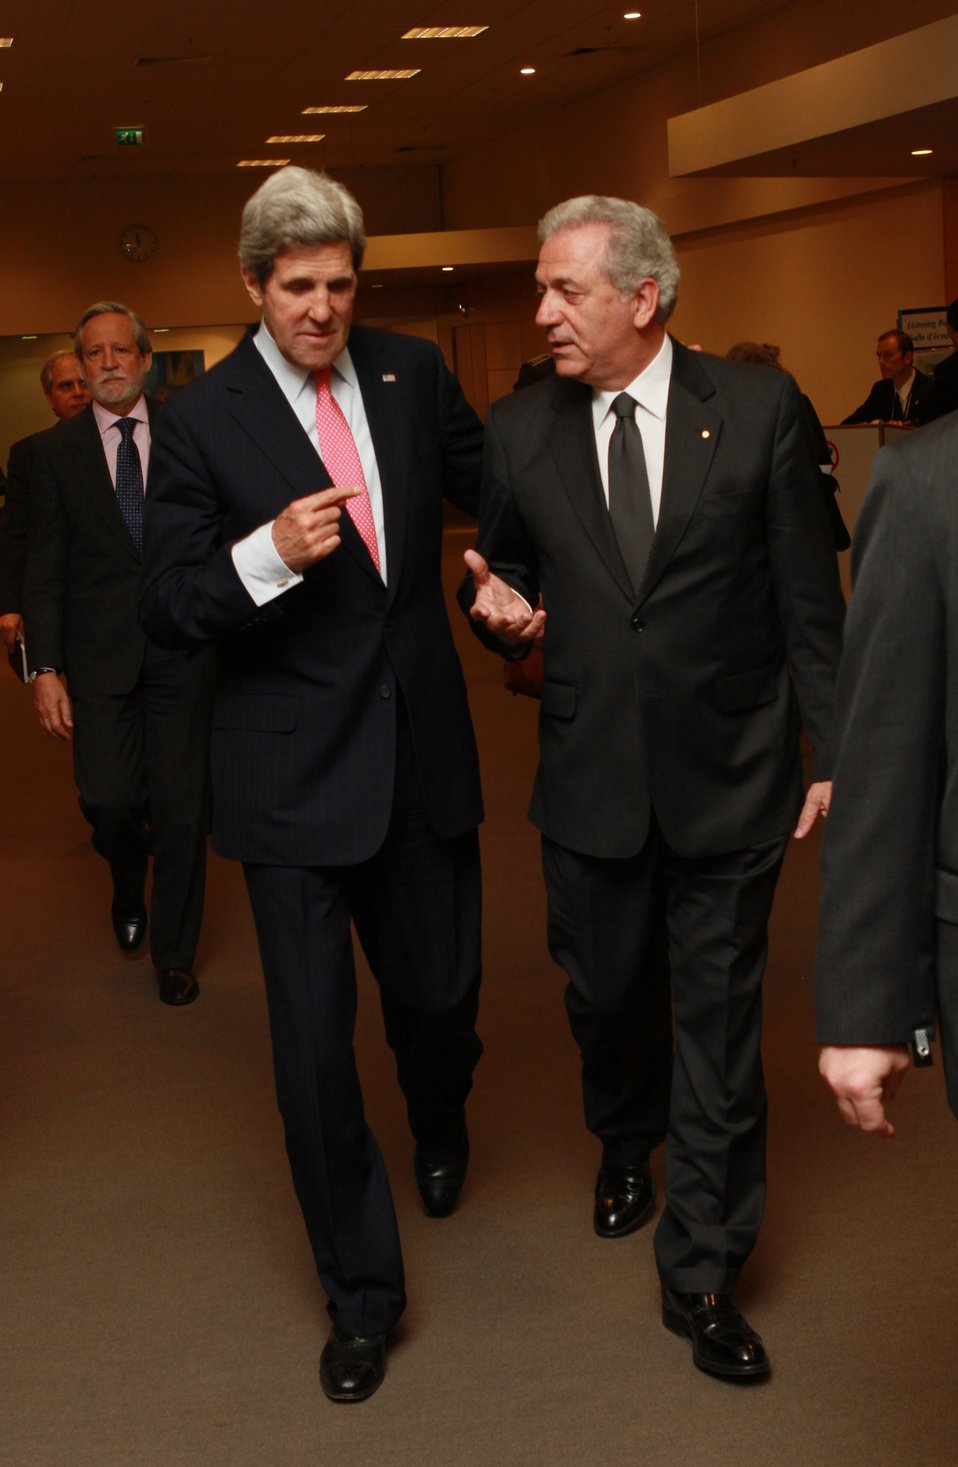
Secretary Kerry Talks With Greek Foreign Minister Avramopoulos

U.S. Secretary of State John Kerry talks with Greek Foreign Minister Dimitrios Avramopoulos at the NATO Foreign Ministerial in Brussels, Belgium, on April 23, 2013.